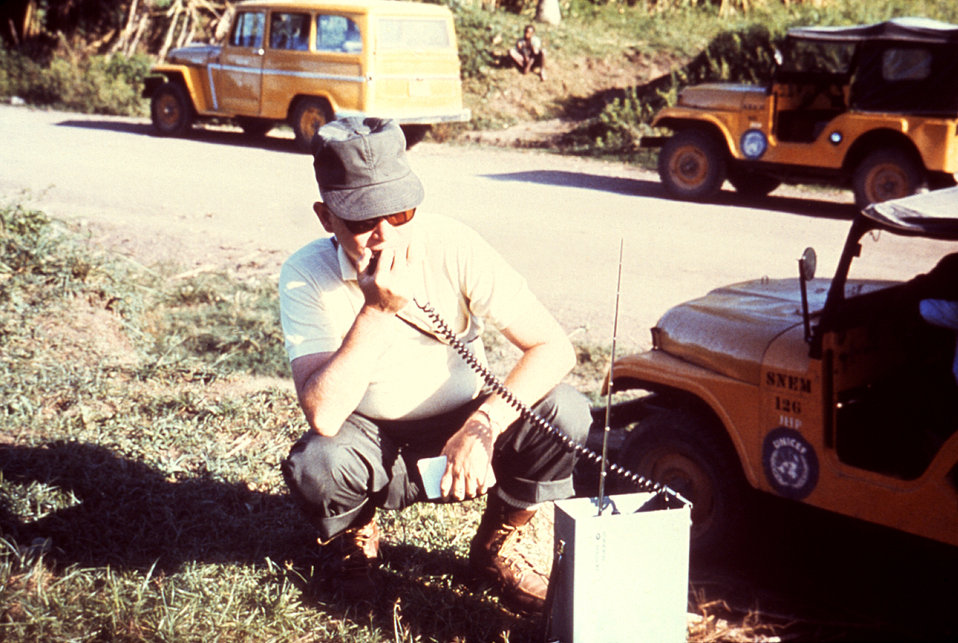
This field technician was using a 'ground-to-air' hand-held radio transmitter in order to guide the dispersal of aerial insecticidal spraying in an attempt to control the populations of potential disease vectors by disseminating an insecticide fog into their outdoor habitat.